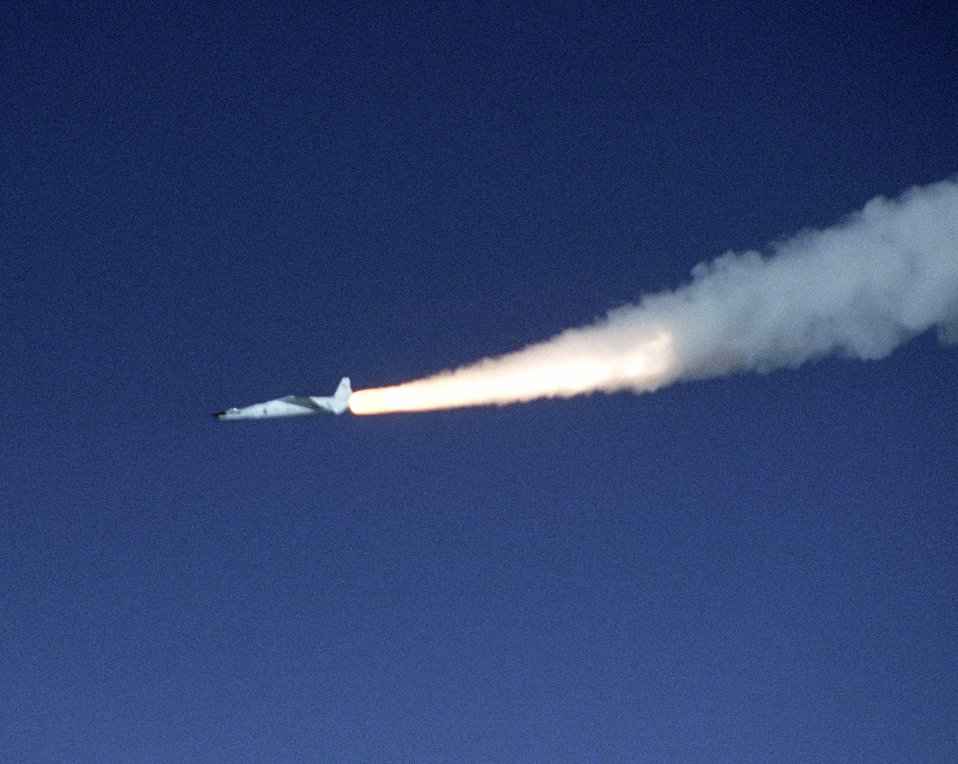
NASA X-43A rockets to Mach 9.8 at Edwards

OVER THE PACIFIC OCEAN -- An X-43A hypersonic research aircraft and its modified Pegasus booster rocket accelerate after launch from NASA's B-52B launch aircraft here Nov. 16. The mission originated from the National Aeronautics and Space Administration's Dryden Flight Research Center at Edwards Air Force Base, Calif. Minutes later the X-43A separated from the Pegasus booster and accelerated to its intended speed of Mach 10.